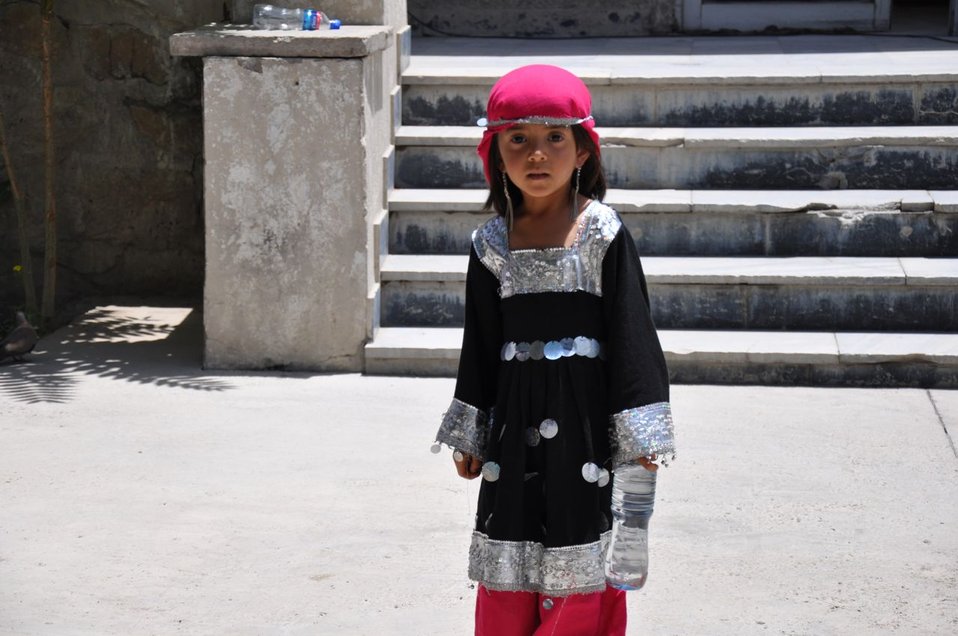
Mother's Day in Afghanistan